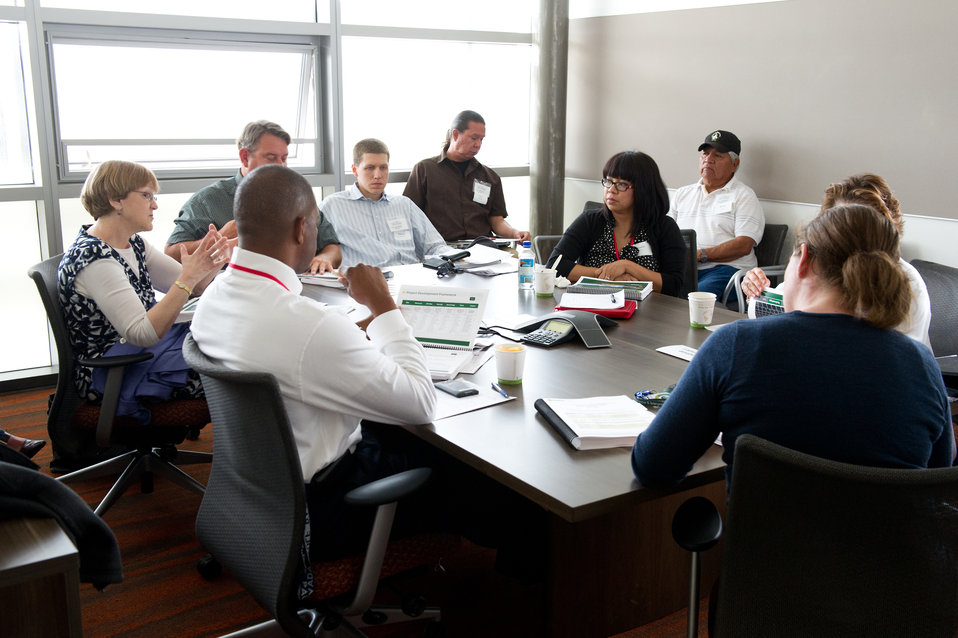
Office of Indian Energy Pilot Session

June 07, 2012 - Tribal leaders and federal and university representatives participate in a break out session at the DOE Office of Indian Energy Pilot Session for Curriculum and Course Offerings.